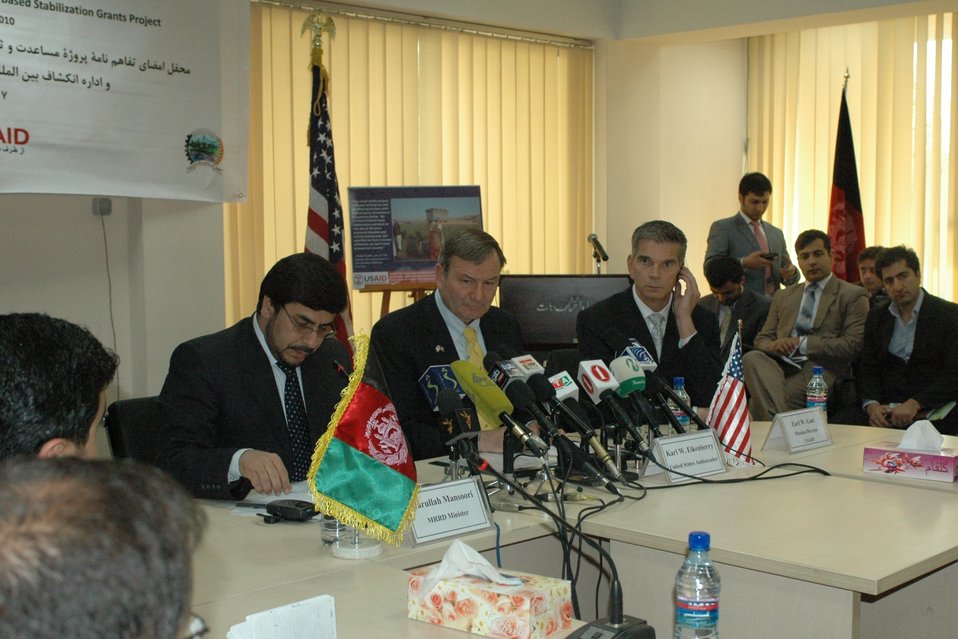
Community Based Stabilization Grants Ceremony, December 7, 2010